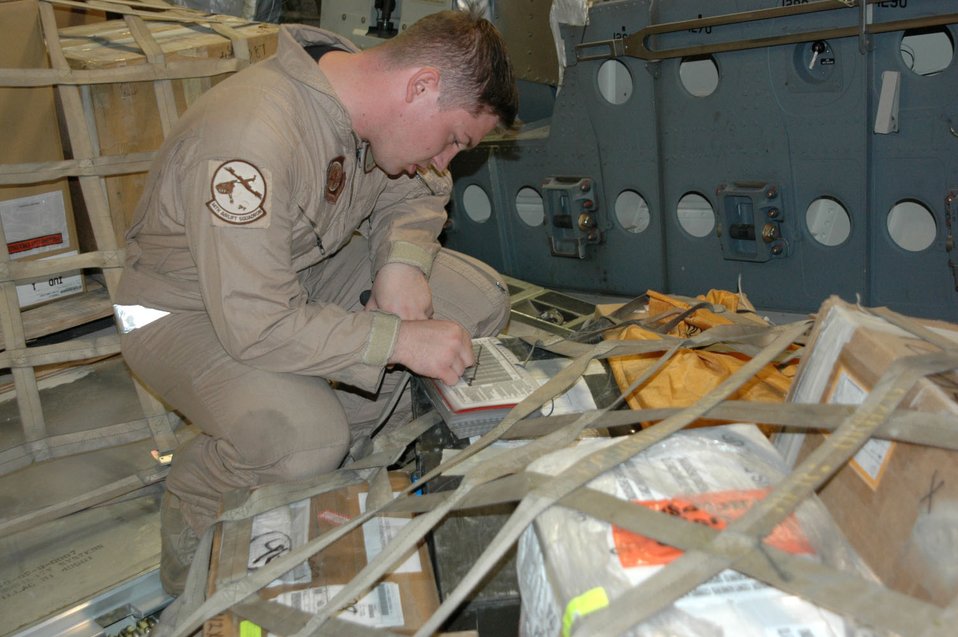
Long hours the norm for deployed Globemaster crews

Senior Airman Steve Baird, C-17 Globemaster III loadmaster, reviews a cargo manifest for a mission in Southwest Asia. The Airman is with Detachment 2, 817th Expeditionary Airlift Squadron. The unit flies C-17s throughout the region, carrying troops and supplies.